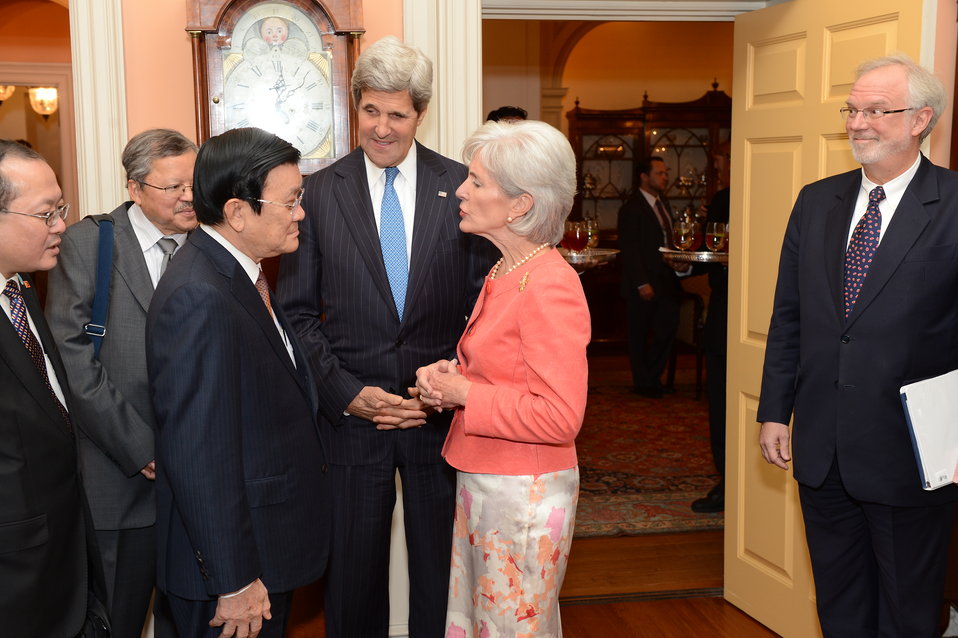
Secretaries Kerry and Sebelius Speak With Vietnamese President Truong Tan Sang

U.S. Secretary of State John Kerry and U.S. Secretary of Health and Human Services Kathleen Sebelius speak with Vietnamese President Truong Tan Sang before a working lunch at the U.S. Department of State in Washington, D.C., on July 24, 2013.